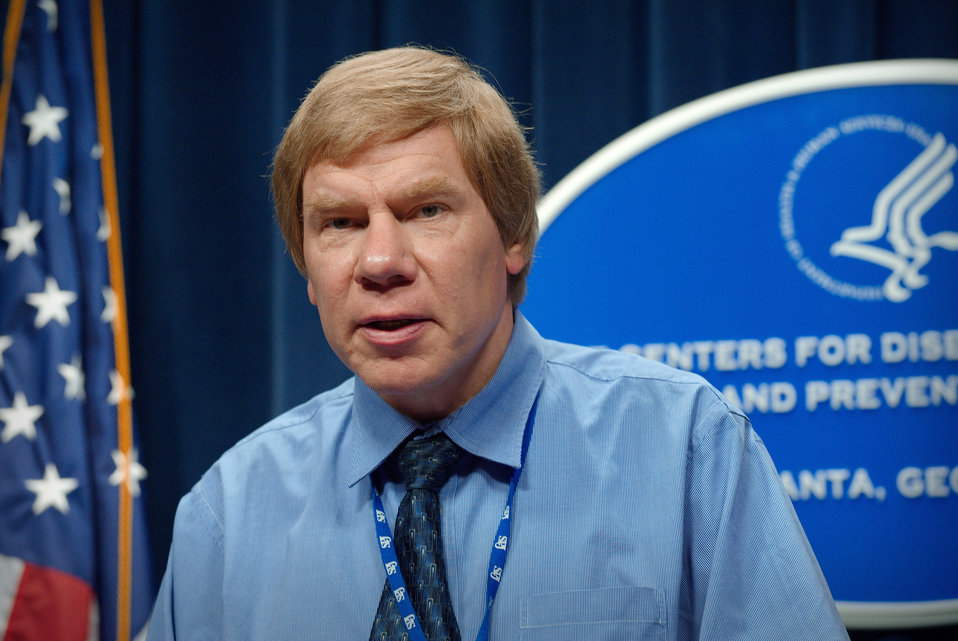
This 2009 photograph depicts the Director of the Division of Media Relations, Office of Enterprise Communication, Dr. Glen Nowak, at the podium during a Centers for Disease Control (CDC) press briefing held in order to discuss an update in the investigation of cases of swine influenza in California and Texas. CDC issued an MMWR dispatch on Tuesday, April 21, 2009. This briefing updated information included in the dispatch.